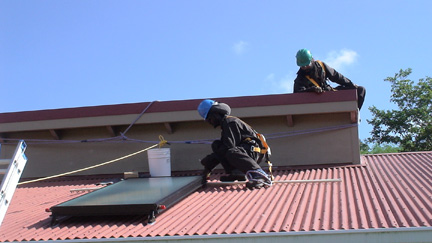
Going Green in the Virgin Islands 2

VIRGIN ISLANDS - Students in the solar water heating installation training program installing solar water heaters on homes for the elderly on St. Croix.